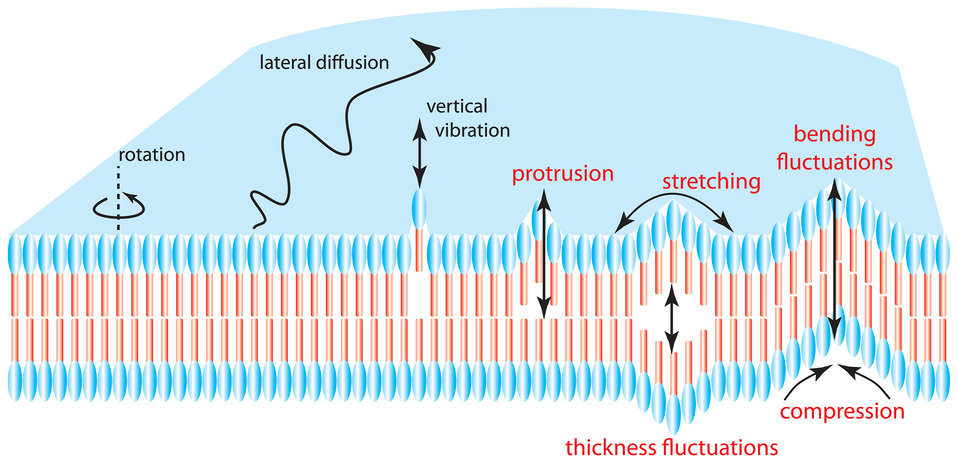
Membrane Dynamics

Among the many types of shape change cell membranes undergo, thickness fluctuations (bottom right) have been among the most difficult to observe. NIST neutron scientists helped make observations of these fluctuations for the first time, an effort that may aid in the understanding of how pores form in the membrane.